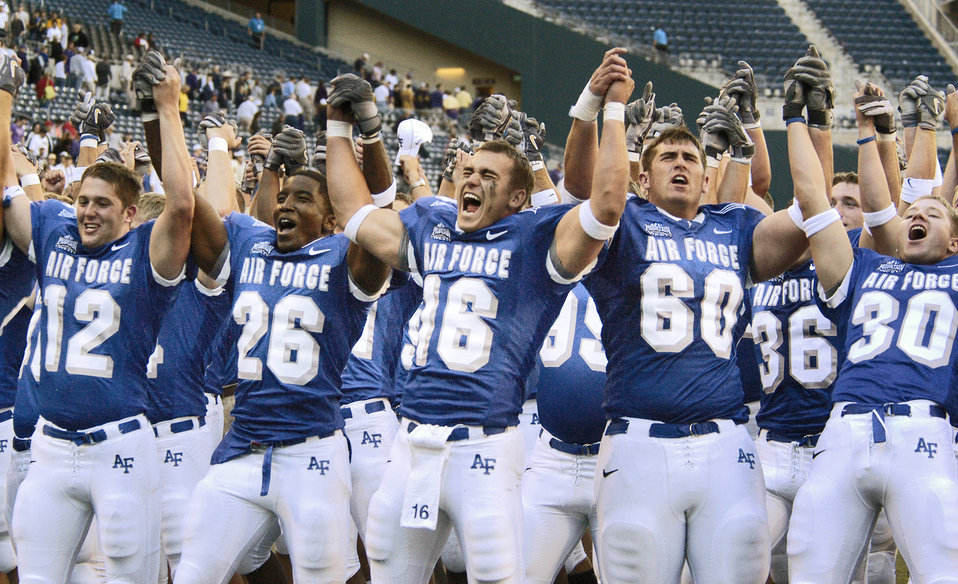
Falcons win opener

SEATTLE -- Air Force Academy Falcon players (left to right) Scott Eberle, 12; Jared Baxley, 26; Adam Fitch, 16; Stuart Perlow, 60; and Donny Heaton, 30; celebrate their 20-17 season opening win over the University of Washington Huskies Sept. 3 at Qwest Field in Seattle.